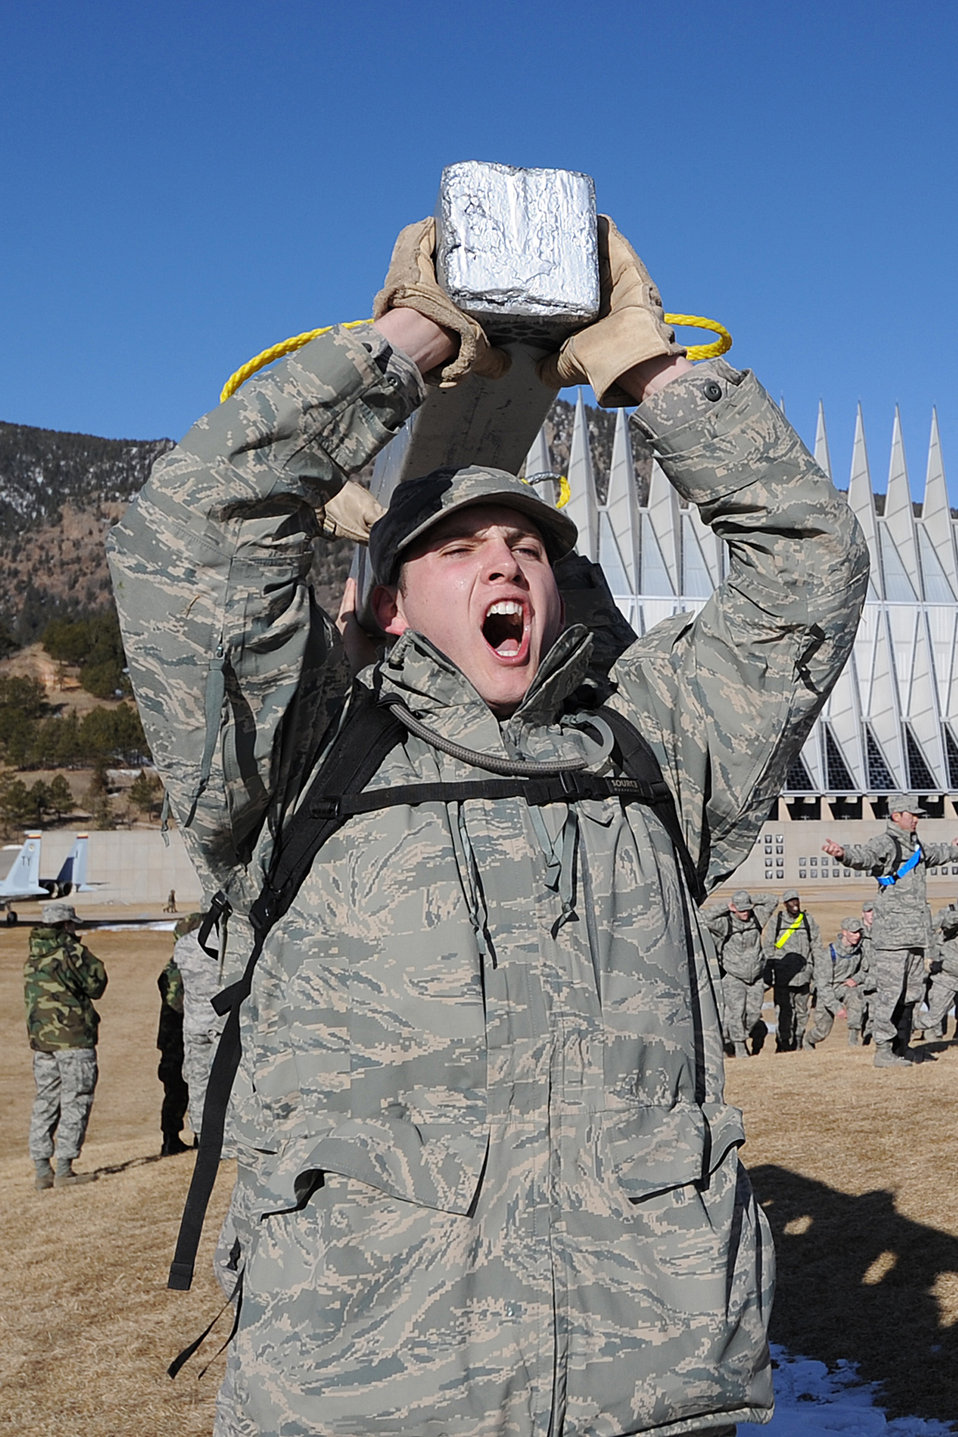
Recognition Days

Cadet freshman Curtis Widener of Cadet Squadron 31 helps to lift his squadron's Charge above his head during Recognition Days at the U.S. Air Force Academy, Colo., March 12, 2010. At the end of the several day-long events, the freshmen will be welcomed into the ranks of the upper class cadets.